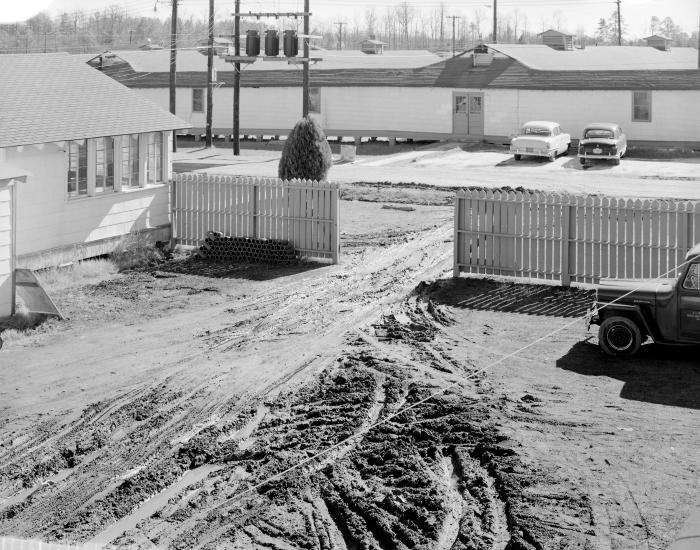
This 1955 photograph showed the grounds outside of the Lawson facilities on the Centers for Disease Control's Chamblee, Georgia campus.